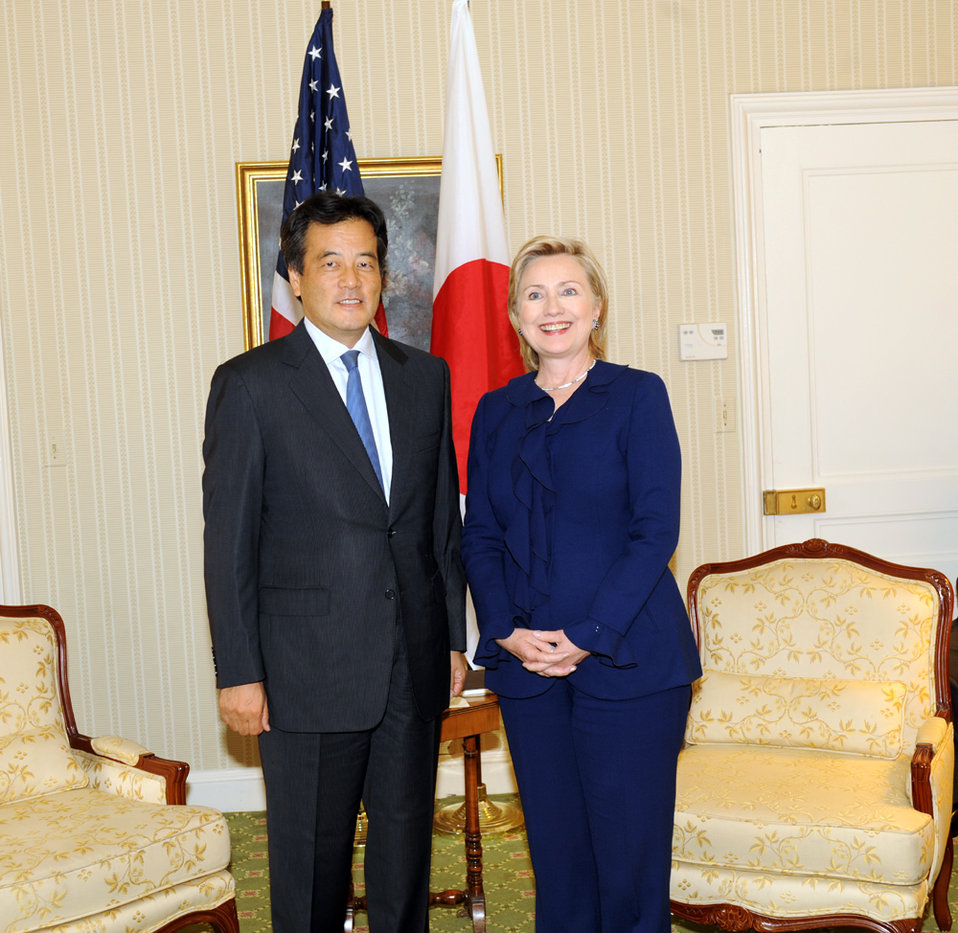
UNGA 2009: Secretary Clinton Meets With Japanese Foreign Minister

U.S. Secretary of State Hillary Rodham Clinton meets with Japanese Foreign Minister Katsuya Okada at the Waldorf Astoria hotel during the 64th Session of the UN General Assembly in New York City, New York September 21, 2009.